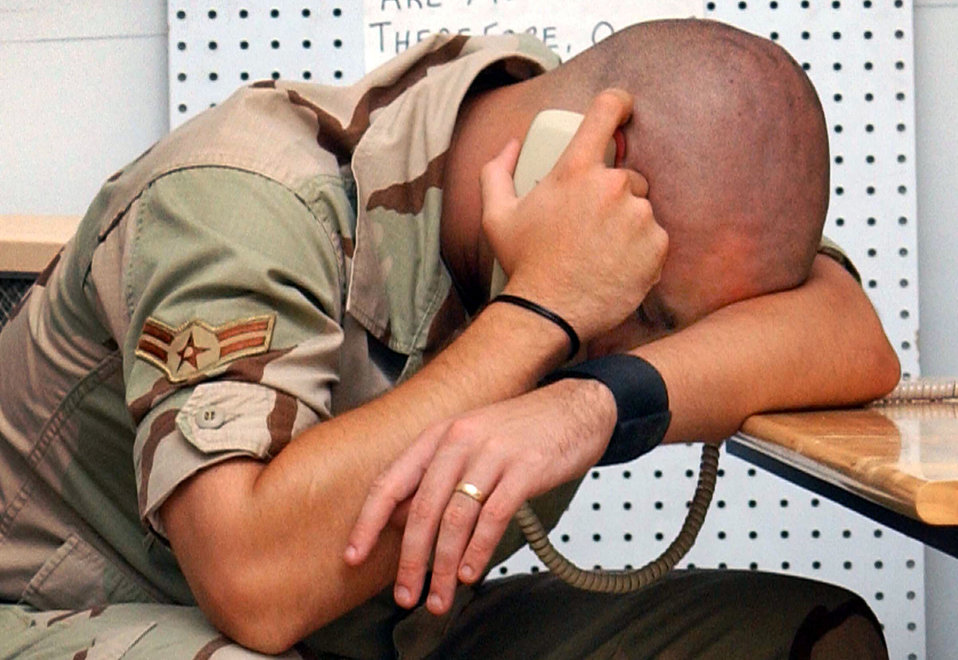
I miss you

OPERATION IRAQI FREEDOM -- Airman 1st Class Joshua Lewis, a firefighter deployed from Beale Air Force Base, Calif., has a few precious moments talking with his wife via telephone at the 486th Air Expeditionary Wing morale facilities.